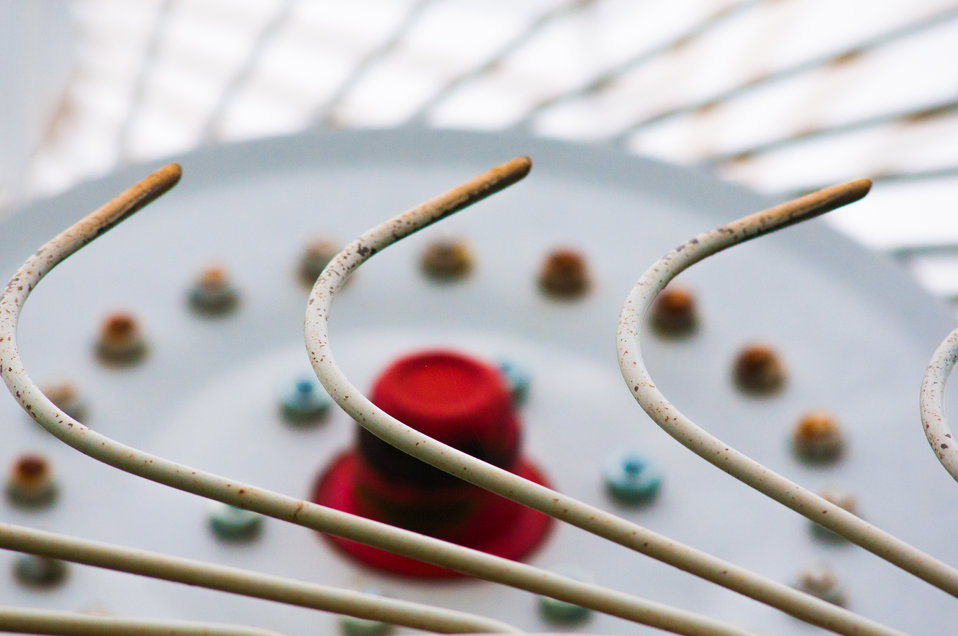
Farm equipment at Nick’s Organic Farm, owned by Nick Maravell in Adamstown, MD on Friday, July 12, 2013. The farm produces Black Angus beef, chicken, turkey, eggs, hay, soybeans, corn, alfalfa, orchard grass, rye; and other crops. The cattle are 100% grass-fed receiving certified organic pasture, certified organic hay (in winter), water and mineral salts mixed with sea kelp. The cattle are not fed hormones, antibiotics or animal products. Poultry feed from grain is ground from organic grain. The poultry also graze on organic pastures. The farm has conducted on-farm research with federal, state and non-profit agencies to refine organic practices. An organization such as the U.S. Department of Agriculture (USDA) Agricultural Research Service (ARS) center in Beltsville has been able to conduct research to improve organic crops and to breed and manage the cattle so that they have. George Kloph is the farm assistant at this site.